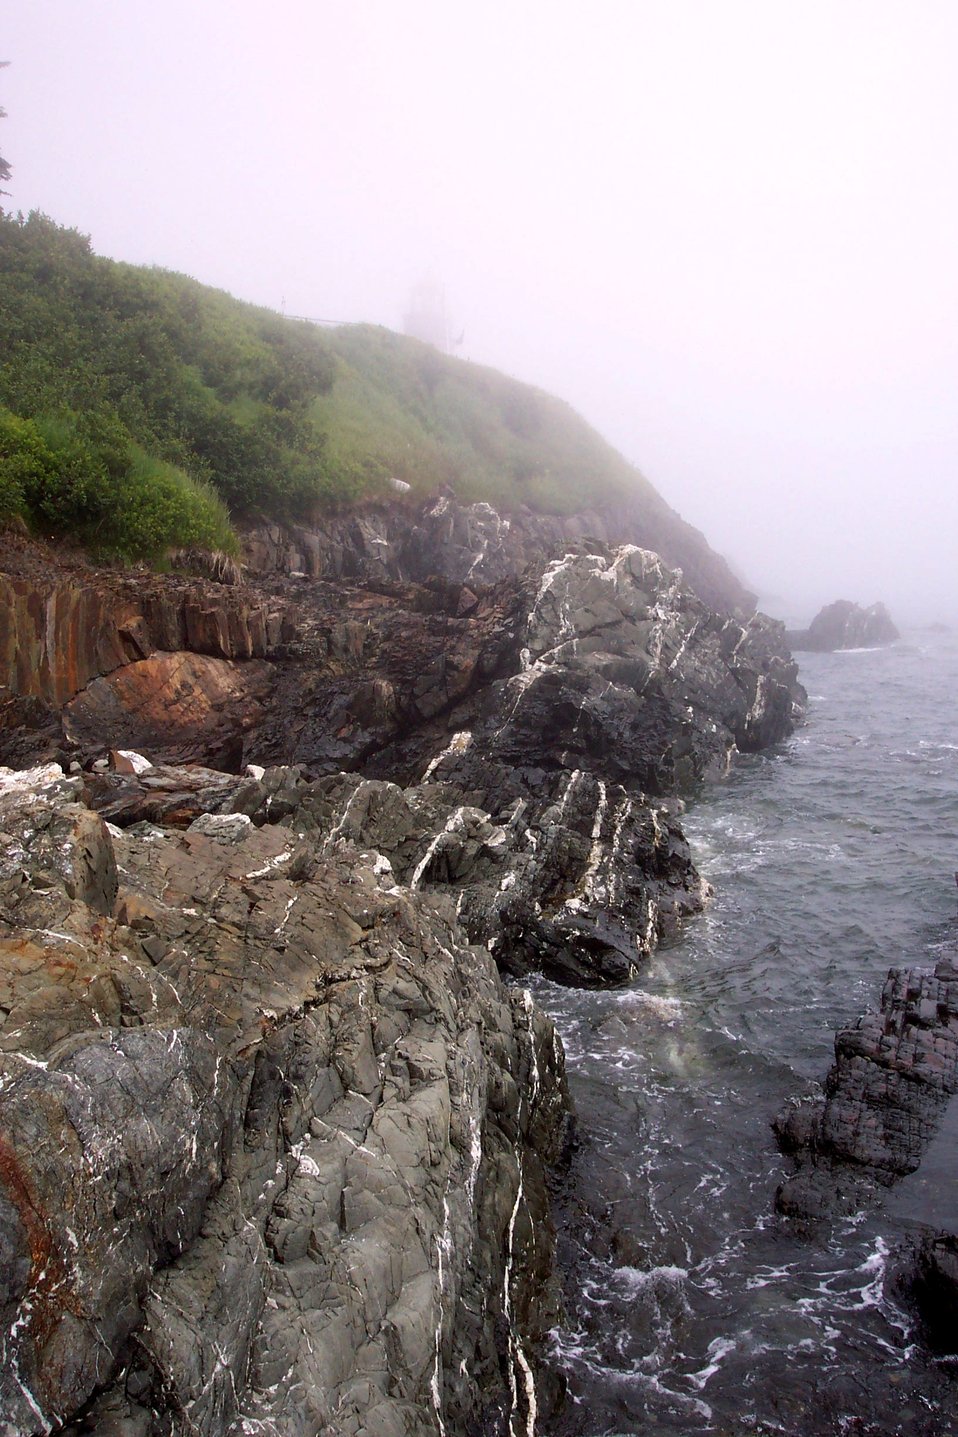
Quartz-veined metamorphic rocks meet the sea below a fog-shrouded lighthouse at West Quoddy Head.